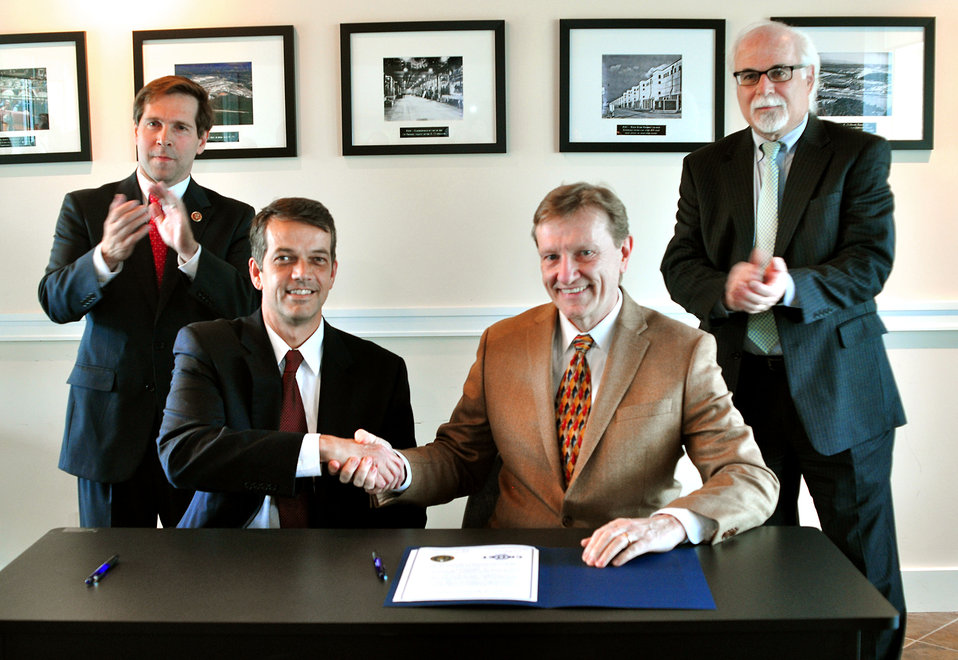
DOE Land Transfer to CROET 2014 Oak Ridge

14-063 DOE photo Lynn Freeny 5-14-2014 L to R U.S. Congressman Chuck Fleischmann, Mark Whitney DOE EM ORO Manager, Larence Young CEO Croet, and David Klaus, DOE’s Deputy Undersecretary for Management and Performance Oak Ridge Tennessee